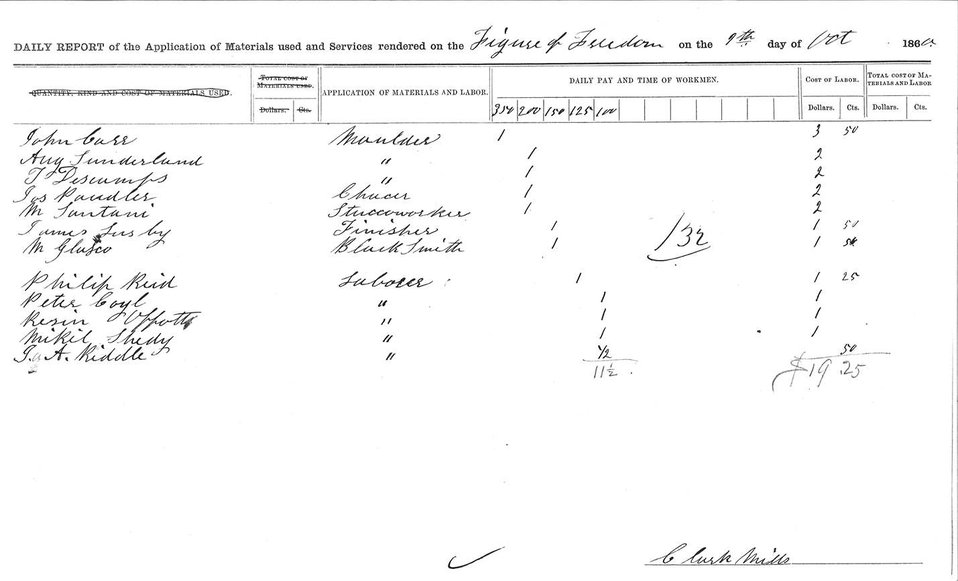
Daily payroll report for work on the Statue of Freedom

This daily payroll report lists names of those working on the Statue of Freedom, including enslaved laborer Philip Reid. Learn more about Reid's contribution to the Capitol.